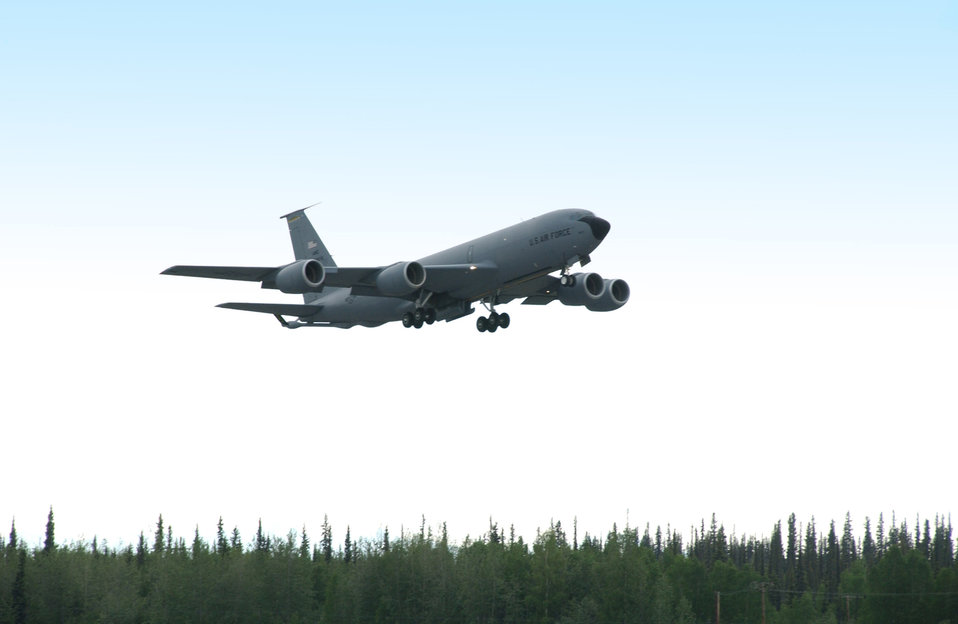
Red Flag-Alaska 07-02

A KC-135 Stratotanker takes off from Eielson Air Force Base, Alaska, June 5 for an Red Flag-Alaska mission. More than 1,400 military members from the United States, Singapore and Australia converged on Alaska May 31 to sharpen their collective war-fighting edge in Red Flag-Alaska 07-2, an exercise that runs through June 15.